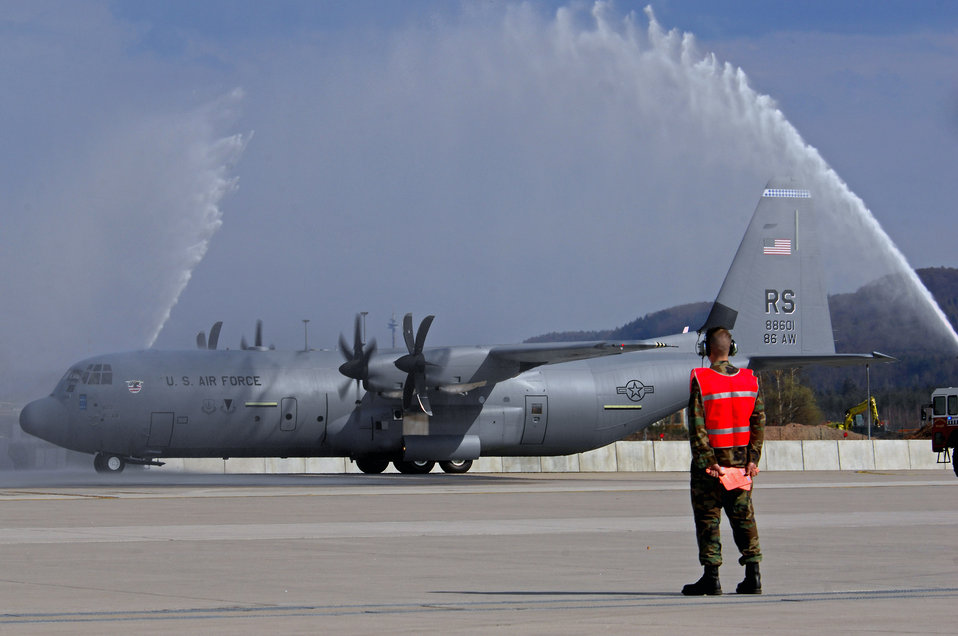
Ramstein welcomes new J-model C-130

The first C-130J Super Hercules to be assigned to the Ramstein Air Base, Germany, fleet taxies under pressured water from two base fire trucks during an arrival ceremony April 7. The aircraft's owning unit, the 86th Airlift Wing, celebrated not only the arrival of the J-model during the ceremony, but also a new era in operations for the wing. This aircraft is the first of 14 J-models that are scheduled to arrive over the next 12 months to replace the older E-model Hercules stationed at Ramstein.